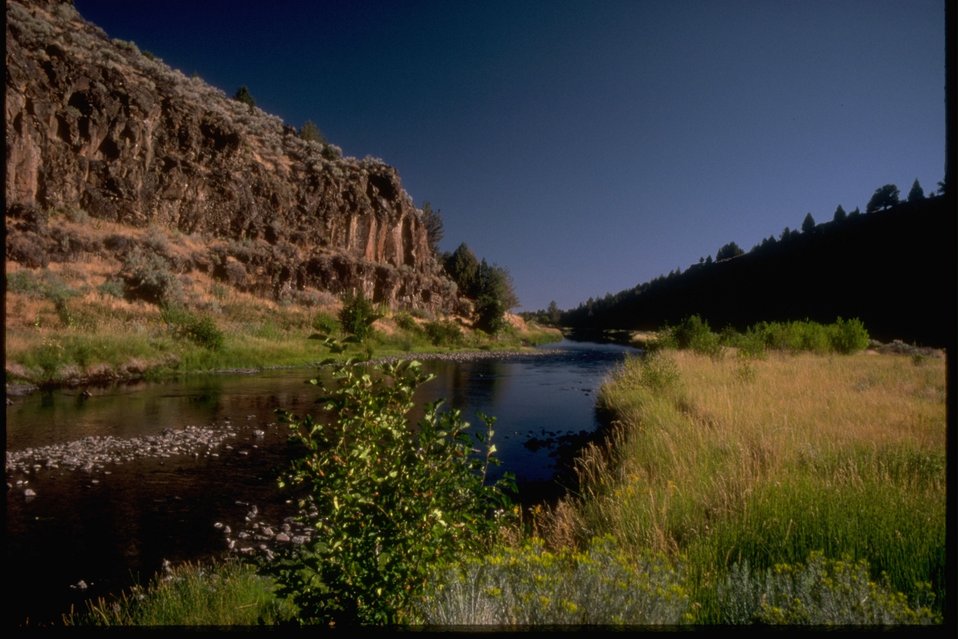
A scenic picture of a riparian area along a river and the cliffs above the river.